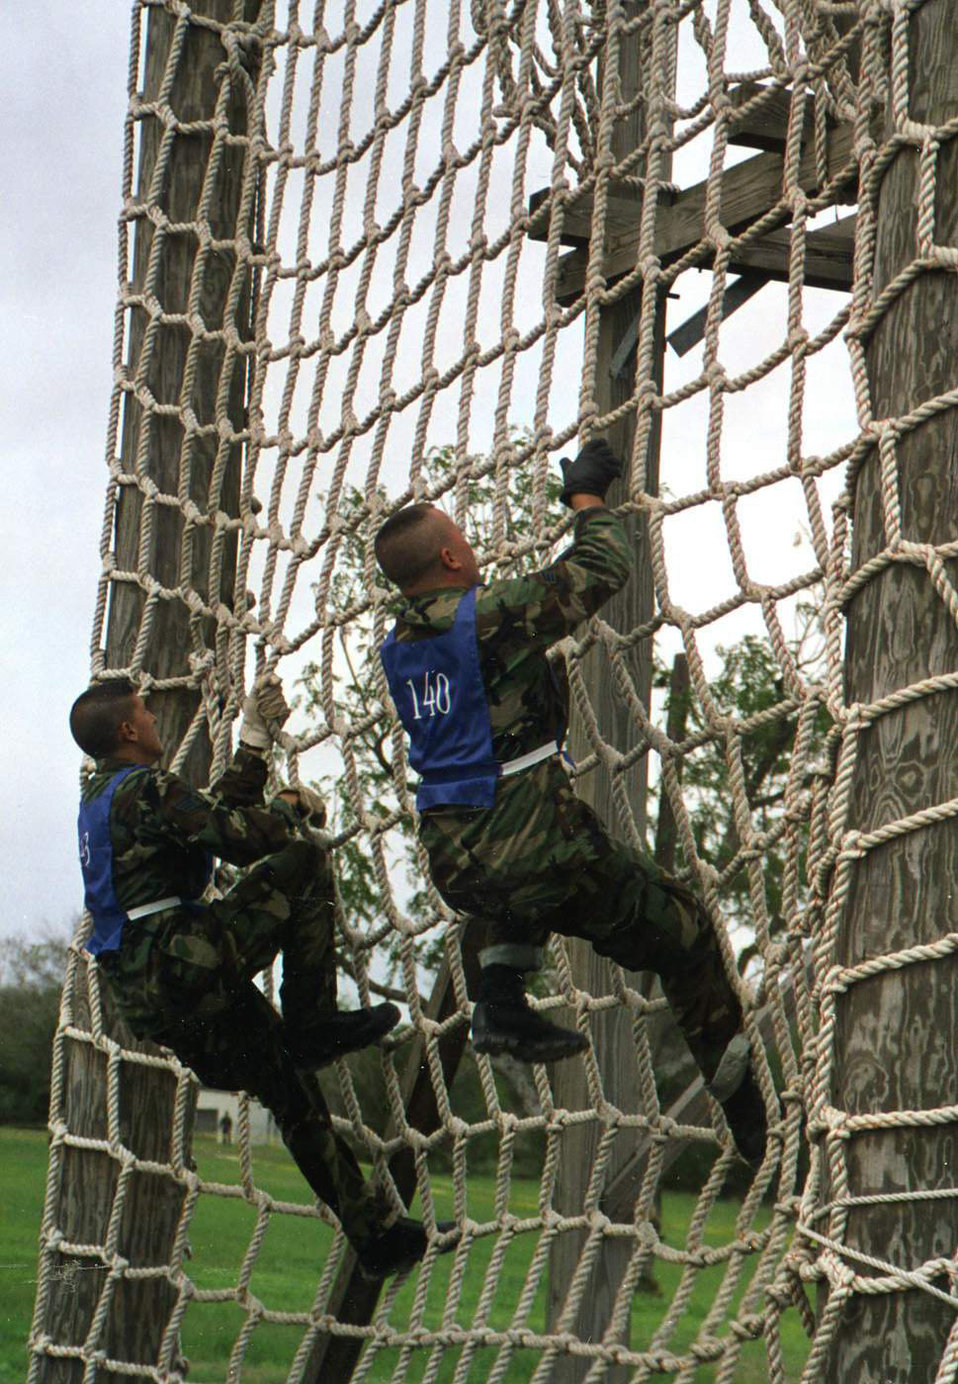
Climb!

LACKLAND AIR FORCE BASE, Texas -- Senior Airman Barry Strube, #140, right, and Staff Sgt. Gabriel Zorrero, #143, left, both Air Force Reserve Command Defender Challenge team members, race to the top of the